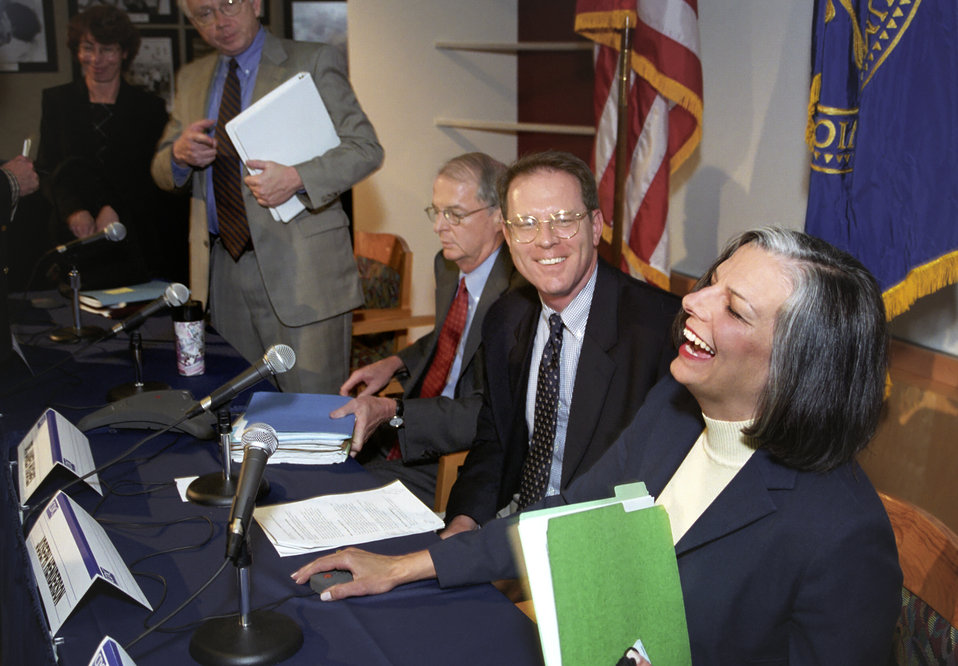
Centers for Disease Control and Prevention Bioterrorism Preparedness Press Briefing, August 27, 2002.